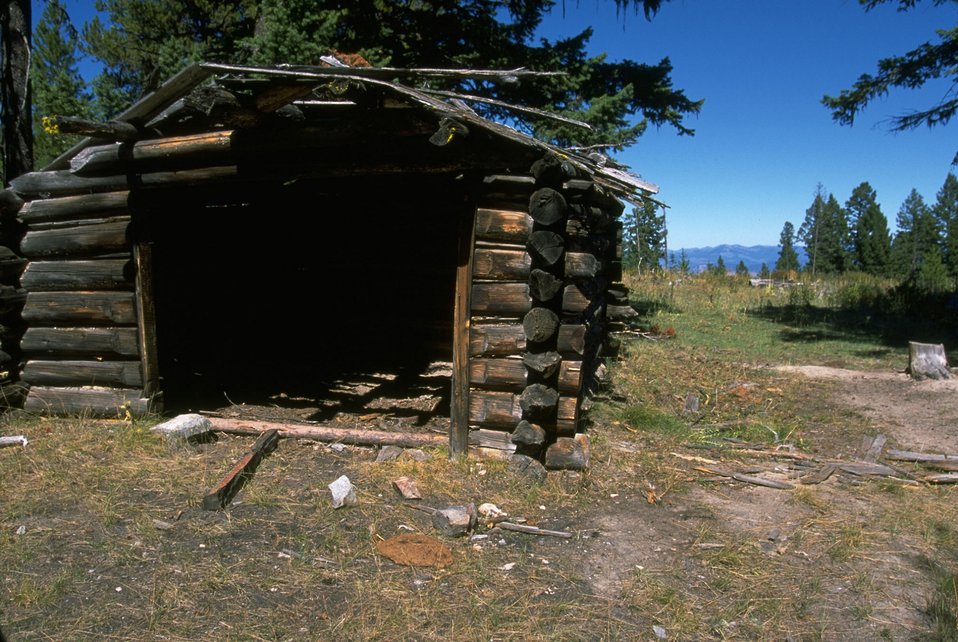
Dilapidated cabing in Coloma Ghost Town